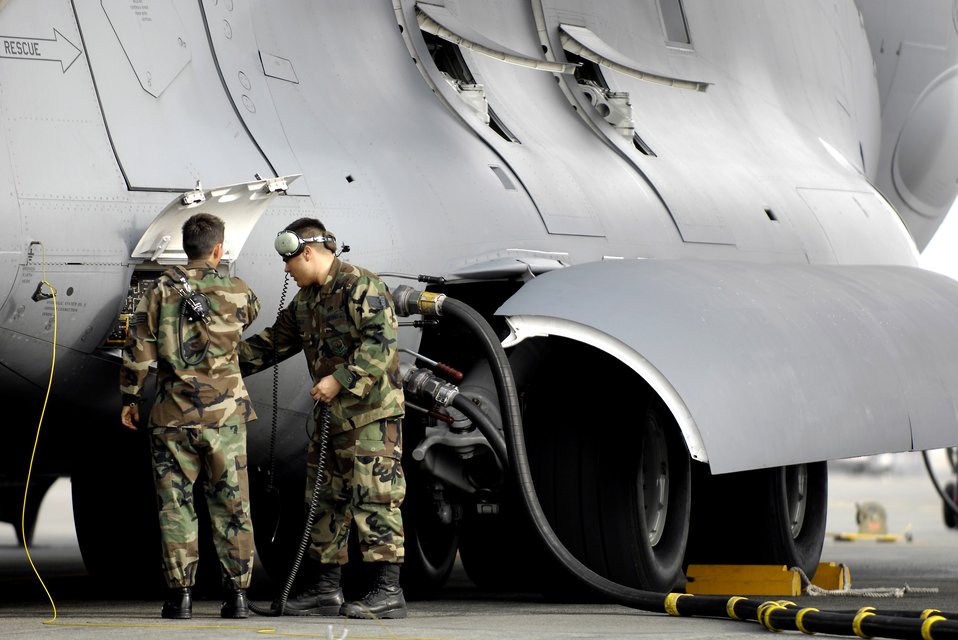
Getting ready to fly to McMurdo

Maintainers from McChord Air Force Base, Wash., refuel a C-17 Globemaster III Aug. 18 after arriving at Christchurch, New Zealand. Airmen and the C-17 are at Christchurch to begin the annual winter fly-in, known as WinFly. During these flights, aircrews transport scientists, support personnel, food and equipment for the U.S. Antarctic program at McMurdo Station, Antarctica. WinFly is the opening of the first flights to McMurdo station, which closed for the austral winter in February.